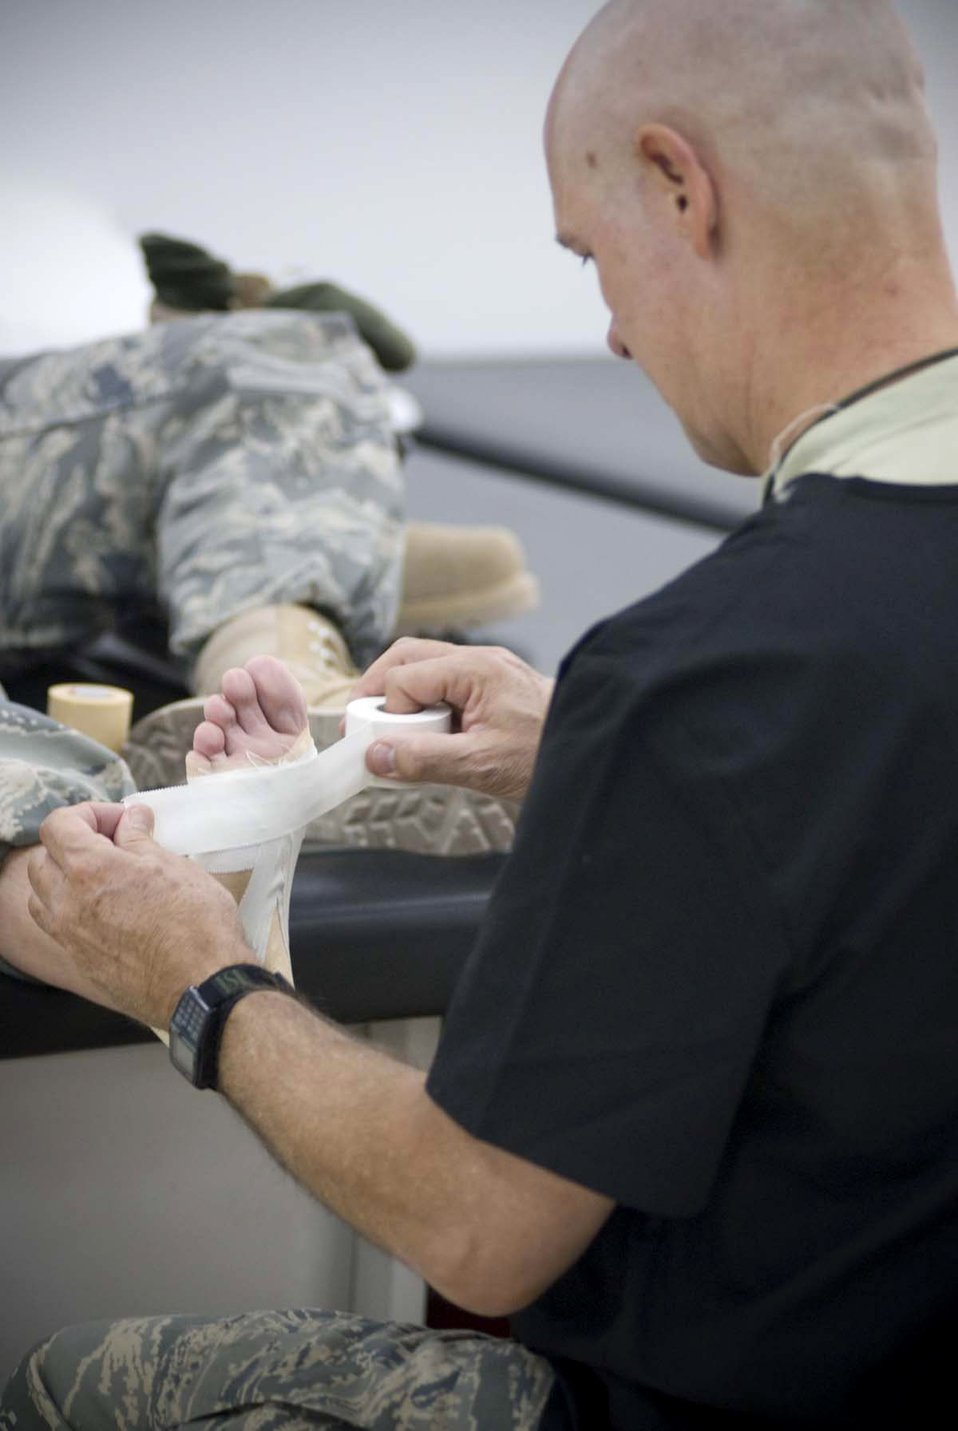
Therapy clinic provides magic touch to injured

Lt. Col. Gary Sherwood wraps up a patients foot Oct. 4 to provide arch support. The foot wrap will help prevent pain as well as add comfort to the patient's foot while in boots. Colonel Sherwood is the officer in charge of the 332nd Expeditionary Medical Support Squadron Physical Therapy/Occupational Therapy Clinic at Balad Air Base, Iraq.